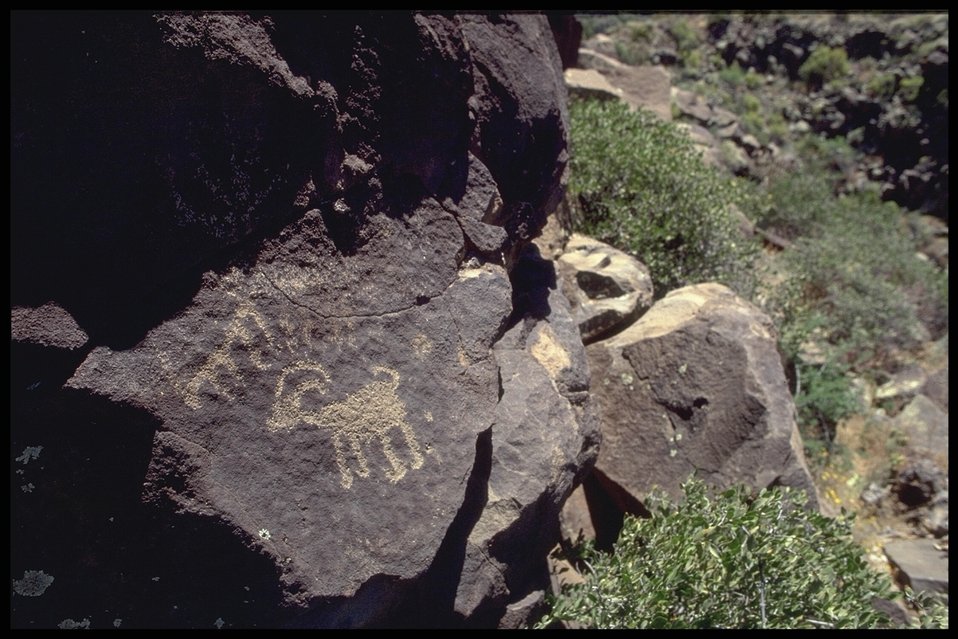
Petroglphs (Rock Art) can be found throughout the 71,000 Acres that make up the Agua Fria National Monument.